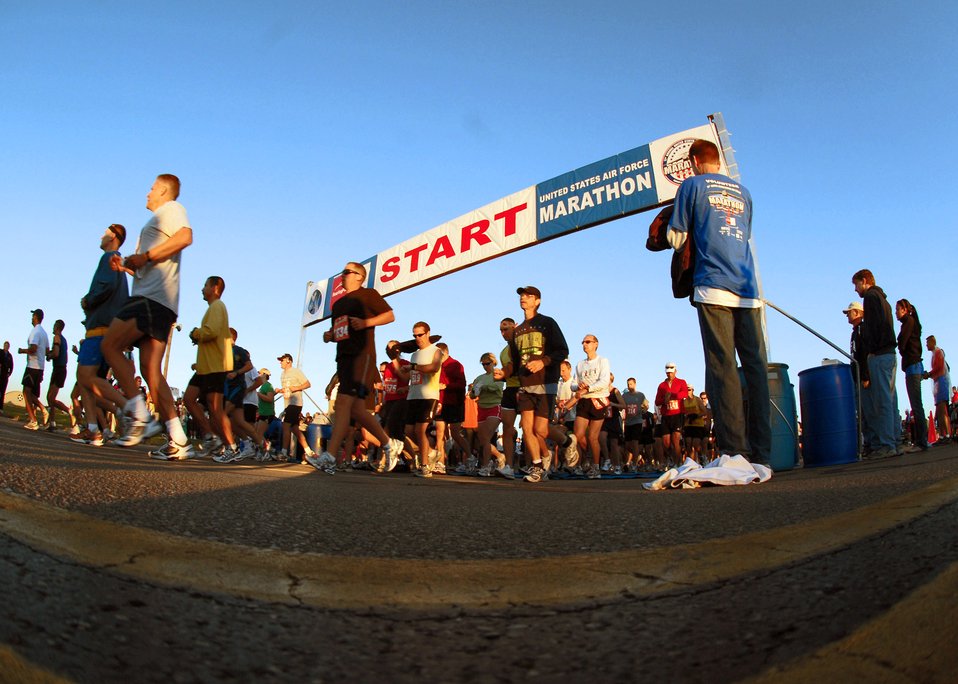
U.S. Air Force Marathon official results announced

Participants take off at the start of the 11th annual U.S. Air Force Marathon Sept. 15 at Wright-Patterson Air Force Base, Ohio. Marathon events included the full marathon, half marathon, 5K race, four-person relay and wheelchair race. More than 6,300 runners participated in the five marathon events.